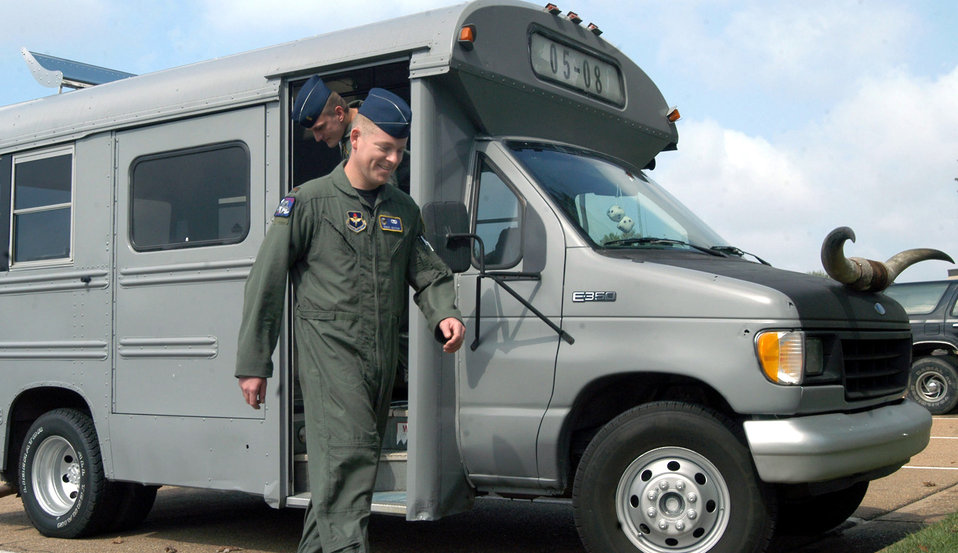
'Taking the bus'

COLUMBUS AIR FORCE BASE, Miss. -- Second Lt. Virgil Watson steps off his class bus. Student pilots of a specialized undergraduate pilot training class ride the bus to and from class, downtown for lunch and on weekend outings. The students pooled their money together to buy the bus to emphasize class cohesiveness.